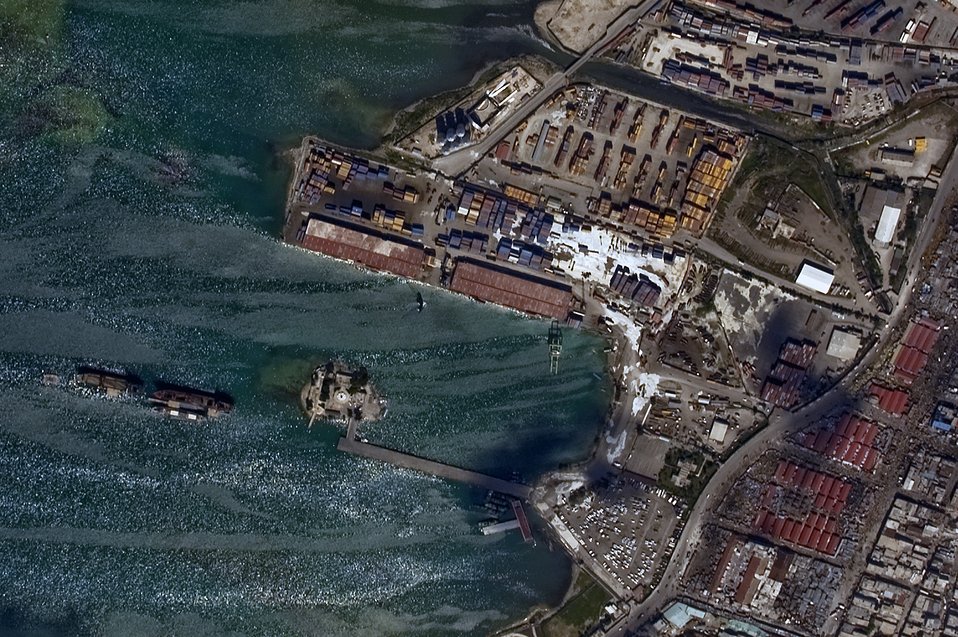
OC-135 crews assist from 15,000 feet

An aerial view of Port-au-Prince harbor in Haiti from an OC-135B Open Skies aircraft Jan. 14, 2010. The OC-135B flew over Haiti for more than three hours taking panoramic photos to help coordinate U.S. military support to the Haitian relief effort.